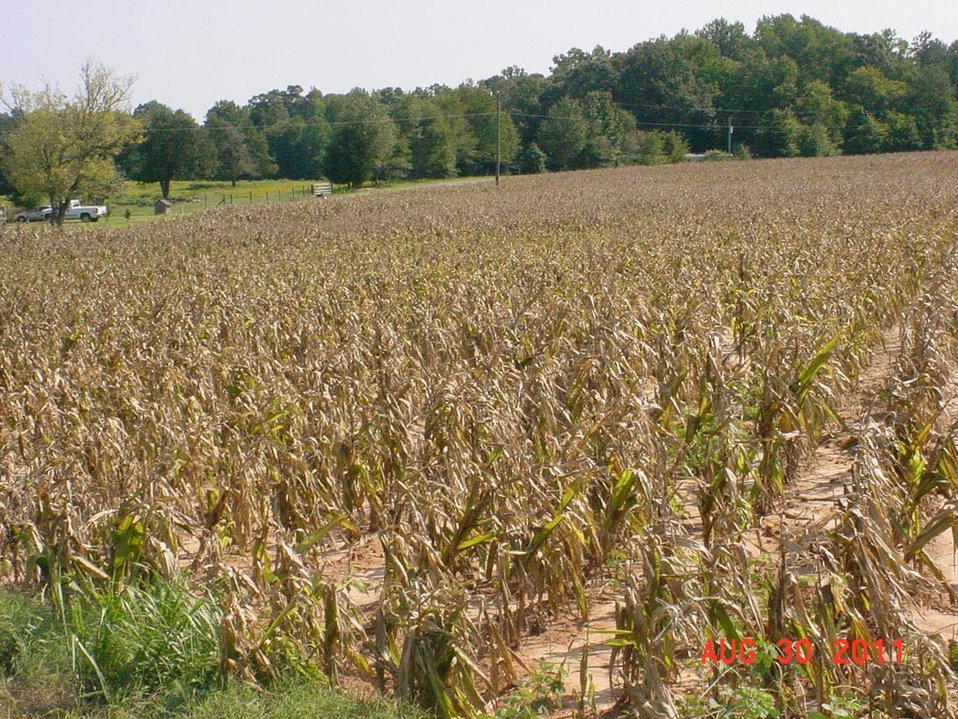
Corn crop damage caused by Hurricane Irene in North Carolina, on Monday, August 29, 2011.